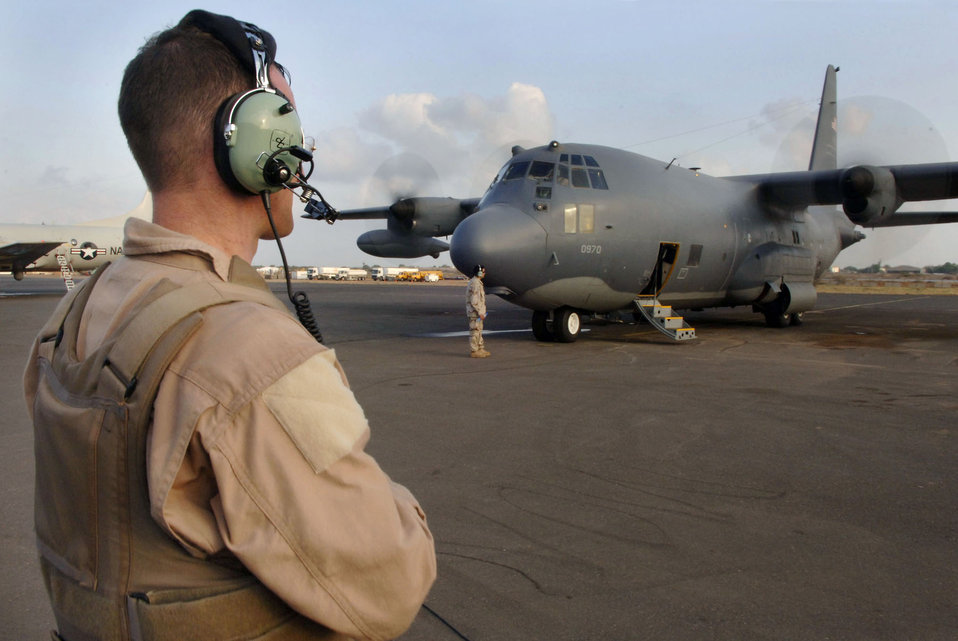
Camp Lemonier

Senior Airman Mark Victor prepares an HC-130P for take off at Combined Joint Task Force- Horn of Africa's Camp Lemonier March 28.